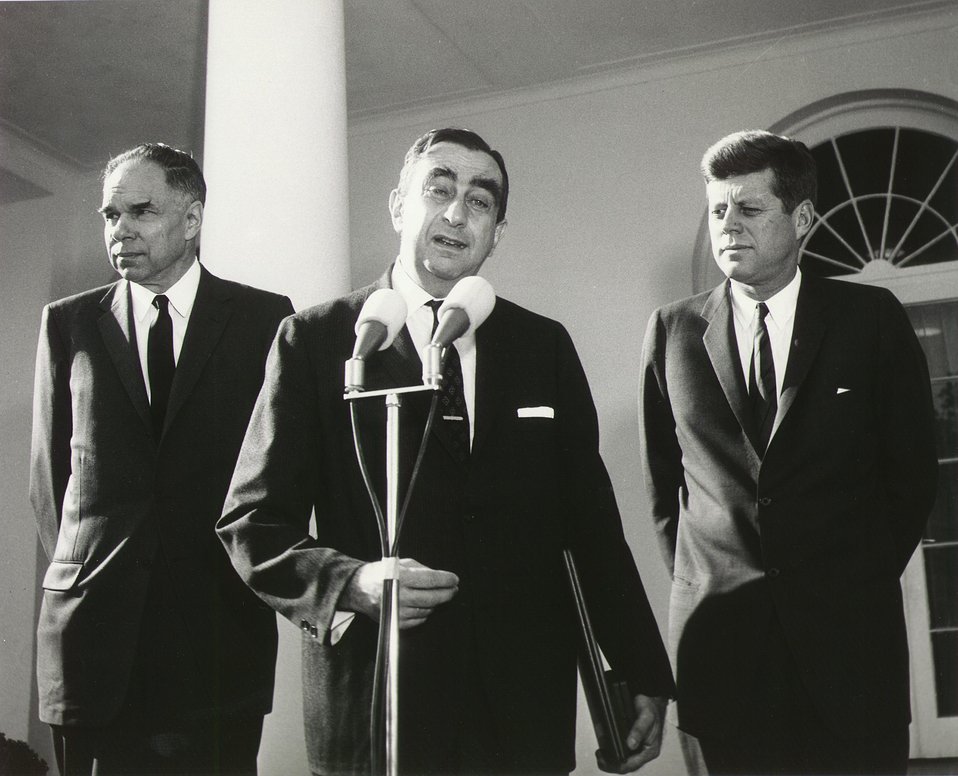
Fermi Award 1962. Teller. L to R, AEC Chairman Glenn Seaborg, Teller, President Kennedy.